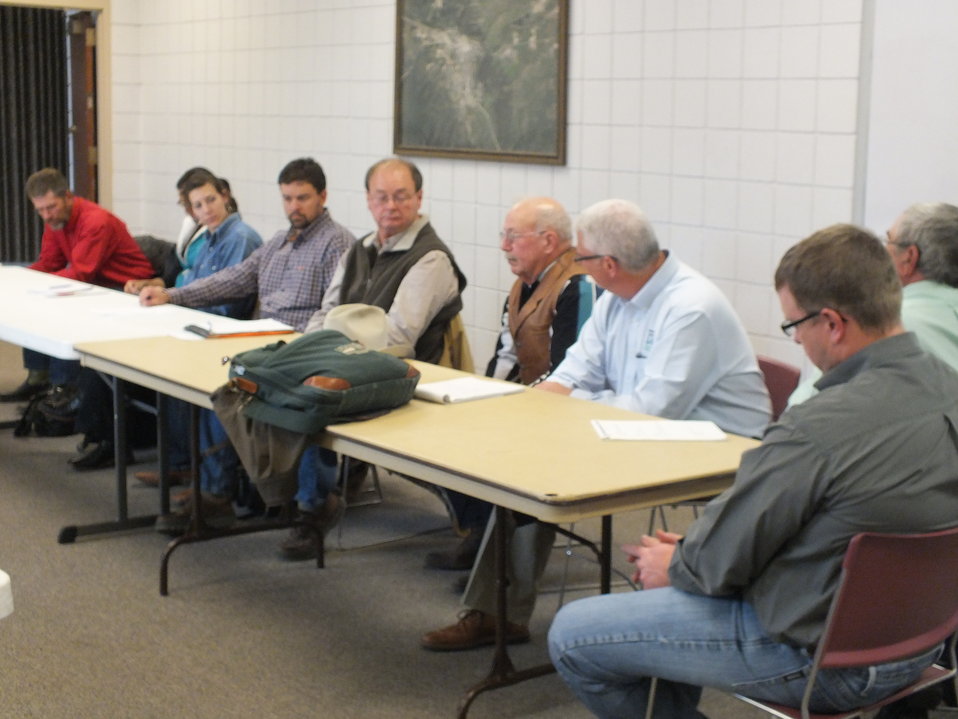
Agriculture Under Secretary for Farm and Foreign Agricultural Services (FFAS) Michael Scuse, Farm Service Agency (FSA) representatives, Natural Resources Conservation Service (NRCS) County, and State officials meet with producers after they viewed the burial pit of cattle that perished in the Atlas Blizzard. The burial pit was approximately 20-25 feet wide and 100 feet long. There were nearly 200 carcasses already in the pit, with many more to come as soil wetness conditions improve in areas that are still inaccessible by conventional methods.